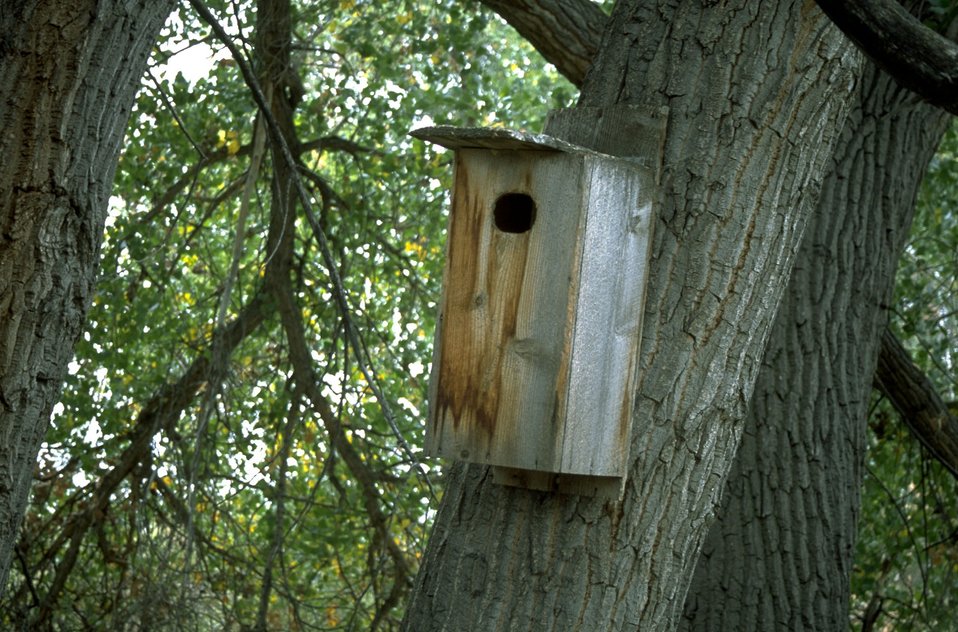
Wood duck nest box at Howrey Island Recreation along the Yellowstone River